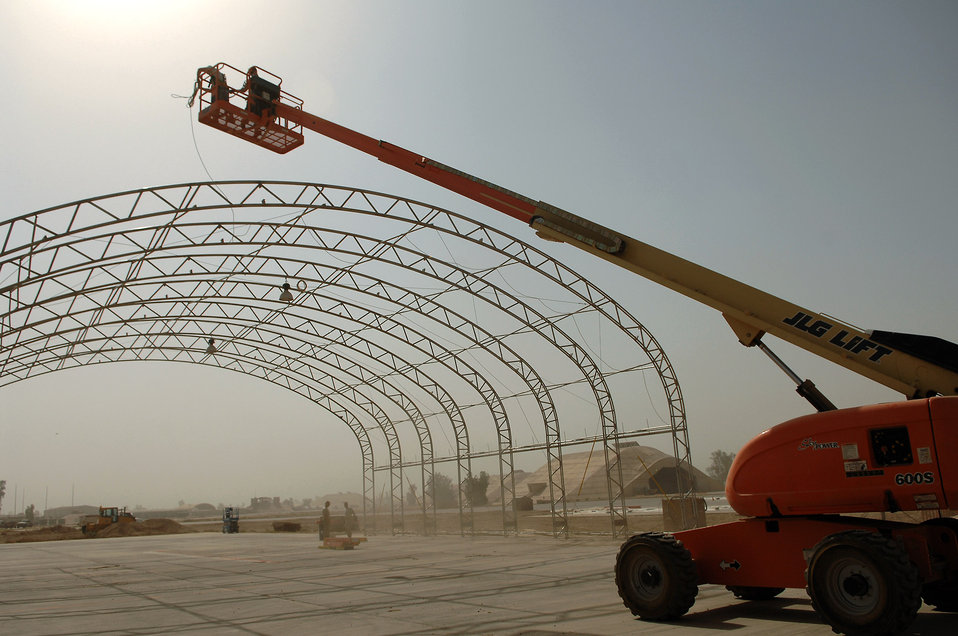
Under the big top

Staff Sgt. Karl Ferree and Senior Airman James Robison position lead ropes on a big top shelter with a bucket truck May 7 at Balad Air Base, Iraq. The shelter can house various aircraft and equipment. Sergeant Ferree is deployed from Luke Air Force Base, Ariz., and Airman Robison is deployed from Malmstrom AFB, Mont. Both are 332nd Expeditionary Civil Engineer Squadron structural engineers.